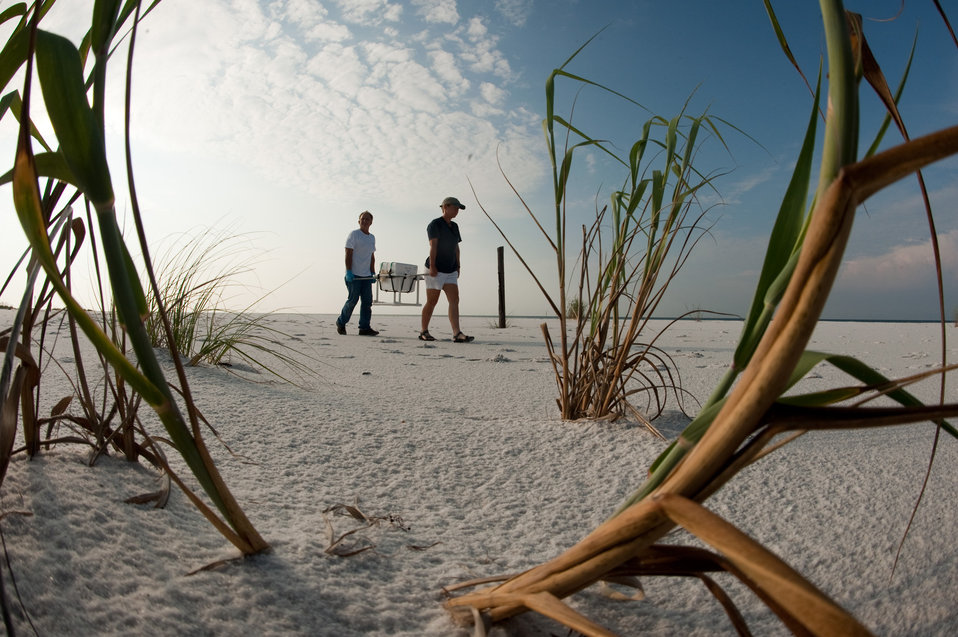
Turtle Eggs avoid Gulf Oil Danger

Kathy Gault (right) and Bob Miller (left) must walk in step and use a sedan style lifting rig to keep the ride of a Styrofoam cooler containing more than 55 Loggerhead sea turtle eggs, smooth and level as they walk in step across the pristine white sand beach, to their vehicles at Eglin Air Force Base, Florida, on August 9, 2010. Mr. Miller and Ms. Gault are endangered species biologists with the 96th Civil Engineer Squadron. The cooler is riding on elastic bands of a shipping frame. Because of the critical attachment of the embryo to the inside of the eggshell, the eggs must be gently moved. With equal care the transportation to the Atlantic coast is critical and gentle. At a controlled climate facility, they will be allowed to hatch in the cooler. Wildlife technicians will then release them into the ocean.